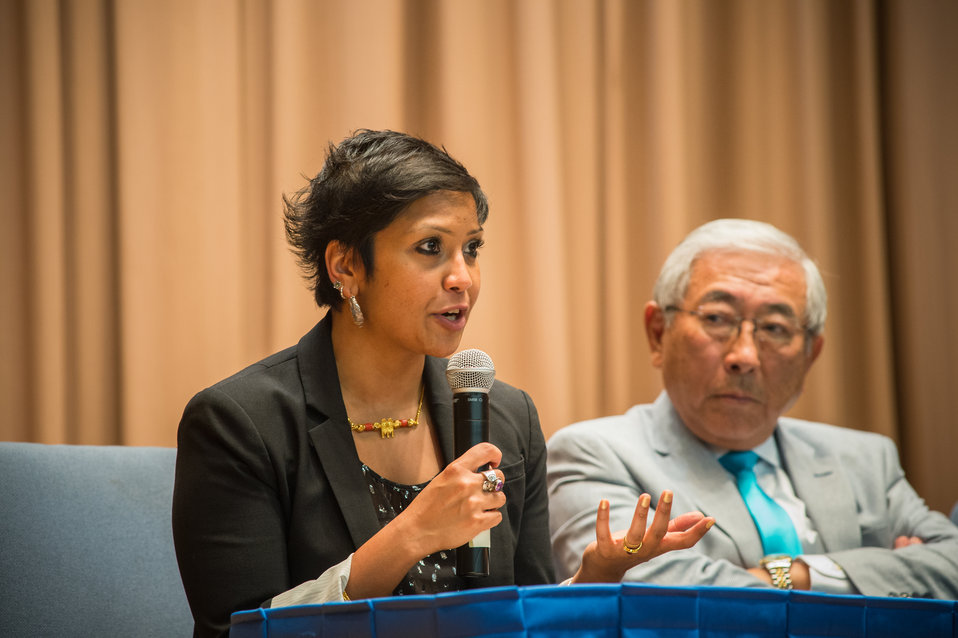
South Asian Americans Leading Together (SAALT) Executive Director Suman Raghunathan participates in a panel discussion on civil rights and leadership at the U.S. Department of Agriculture (USDA) in Washington, D.C. on Thursday, May 22, 2014. The theme of the event was, “Diverse Leadership and Expanding Opportunity: Am Imperative for America.”